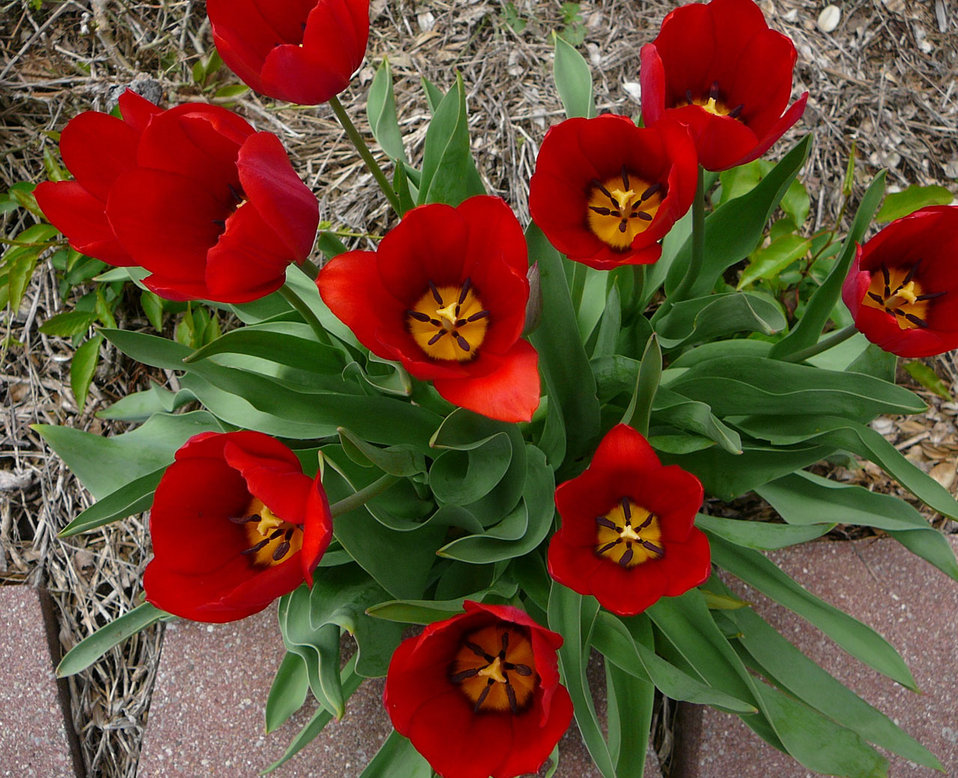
Red tulips

Growing in our front yard....